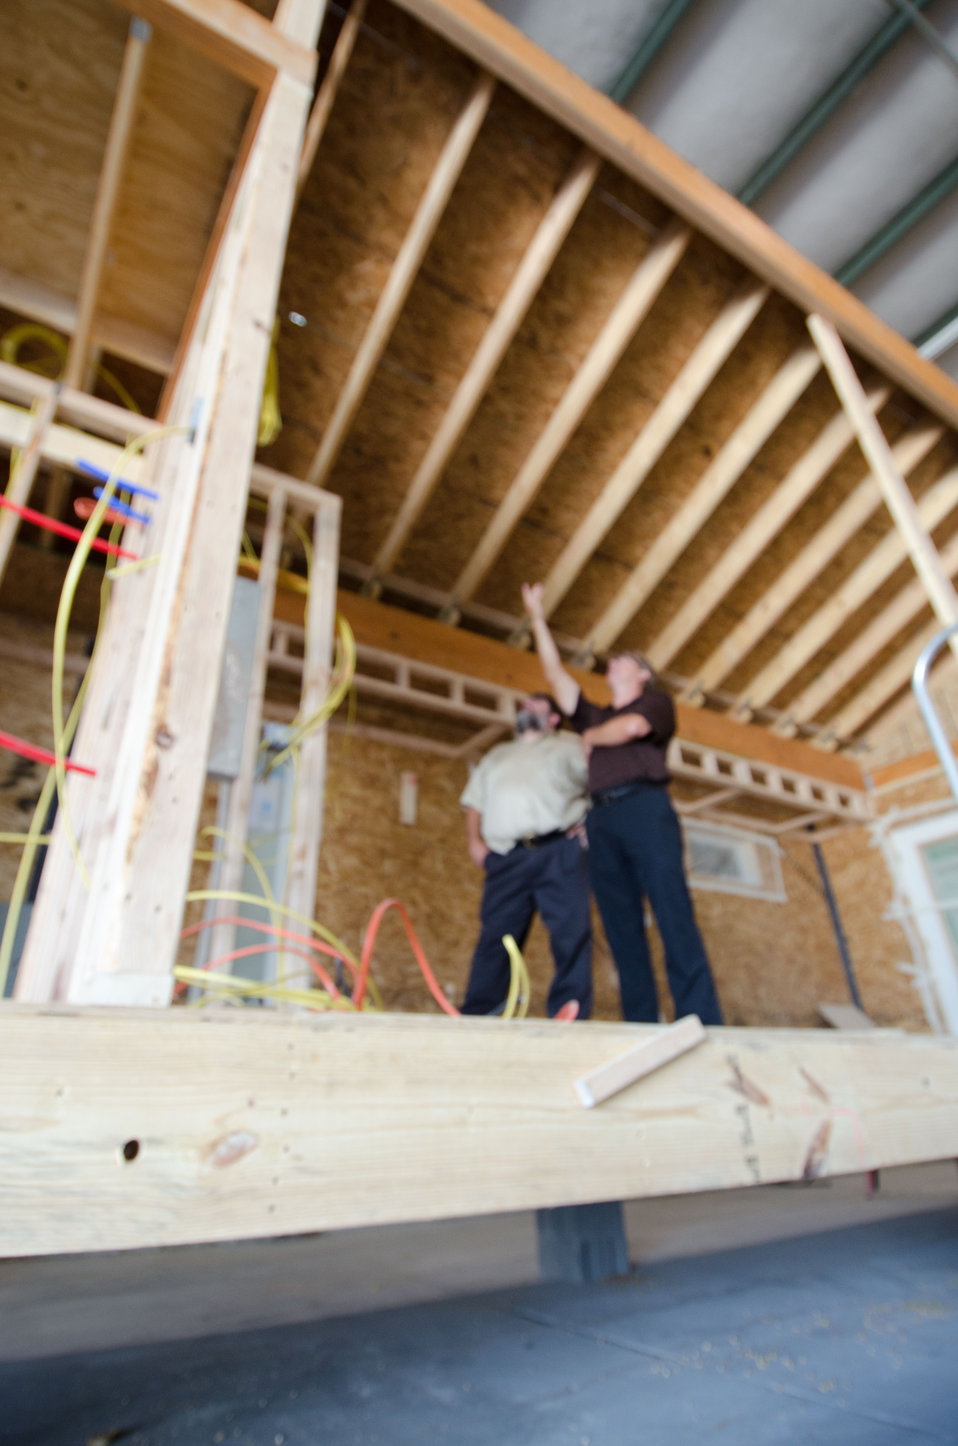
Hinged roof rafters allow the roof to be transported at a lower height on roadways. The energy efficient manufactured home stands ready for dry walling at Stardust Industries on Wednesday, July 13, 2011. They are helping retool and redirect Kentucky’s houseboat manufacturing industry – which has been decimated because of the struggling economy – by using its facilities and manpower to create low-cost housing that is energy efficient. Rural Development obligated $499,000 in Rural Business Enterprise Grant funds to support this unique endeavor. Up until a few years ago, there were several successful houseboat manufacturers in the four-county area surrounding the city of Somerset. Most have now ceased operation or drastically reduced output, which has led to dramatic, long-term job loss. These new energy efficient homes will be constructed in redesigned, refitted houseboat factories using local workers that have been retrained.